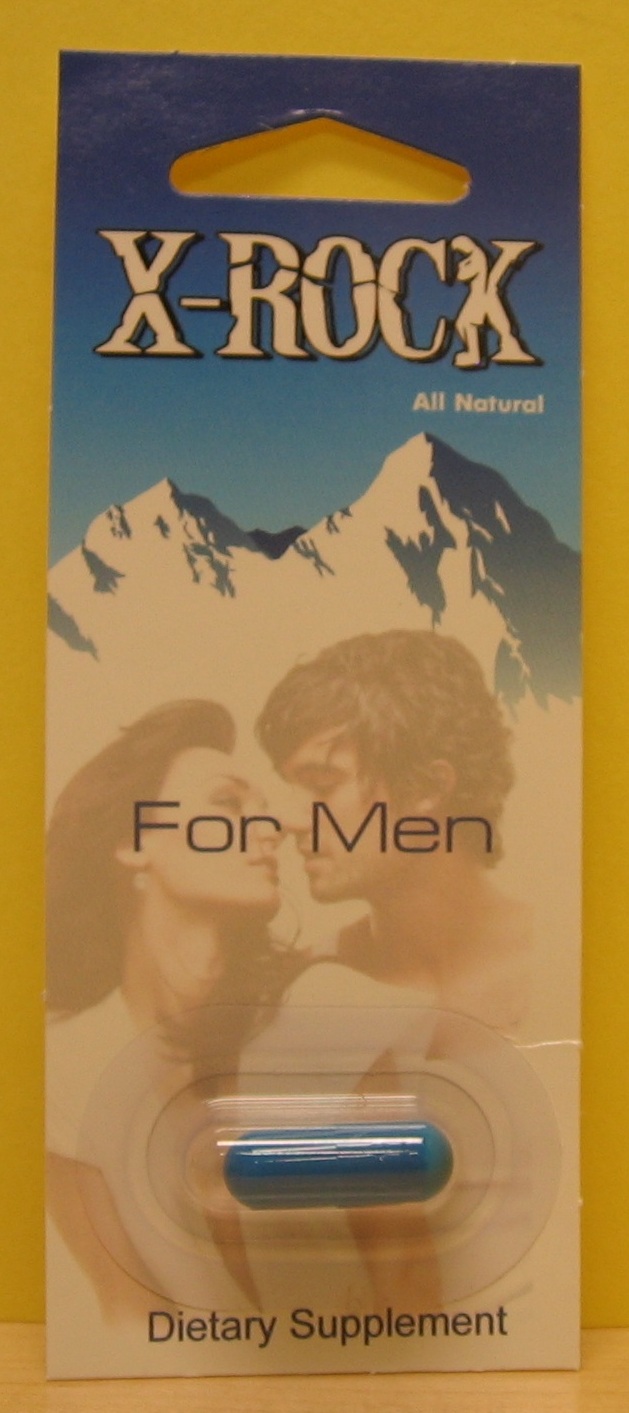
X-Rock

April 18, 2012 - The FDA is advising consumers not to purchase or use 'X-Rock,' a product promoted and sold for sexual enhancement. The product was found to contain undeclared sildenafil and hydroxythiohomosildenafil. For more information, go to www.fda.gov/Drugs/ResourcesForYou/Consumers/BuyingUsingMe...

And read this Consumer Update: Beware of Fraudulent ‘Dietary Supplements’